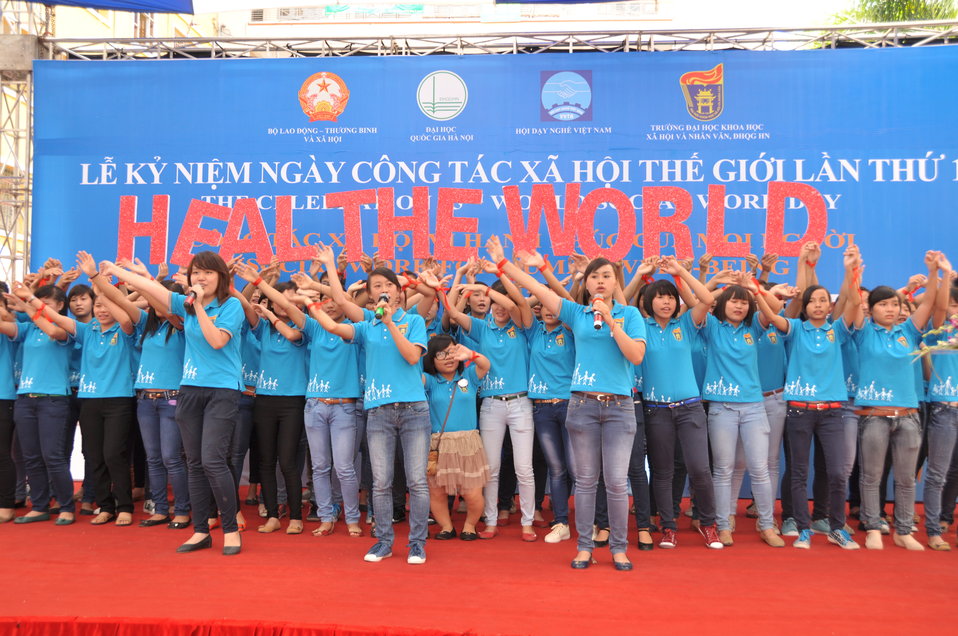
USAID Supports Social Work Education

Photo: @USAIDVietnam, November 9, 2012